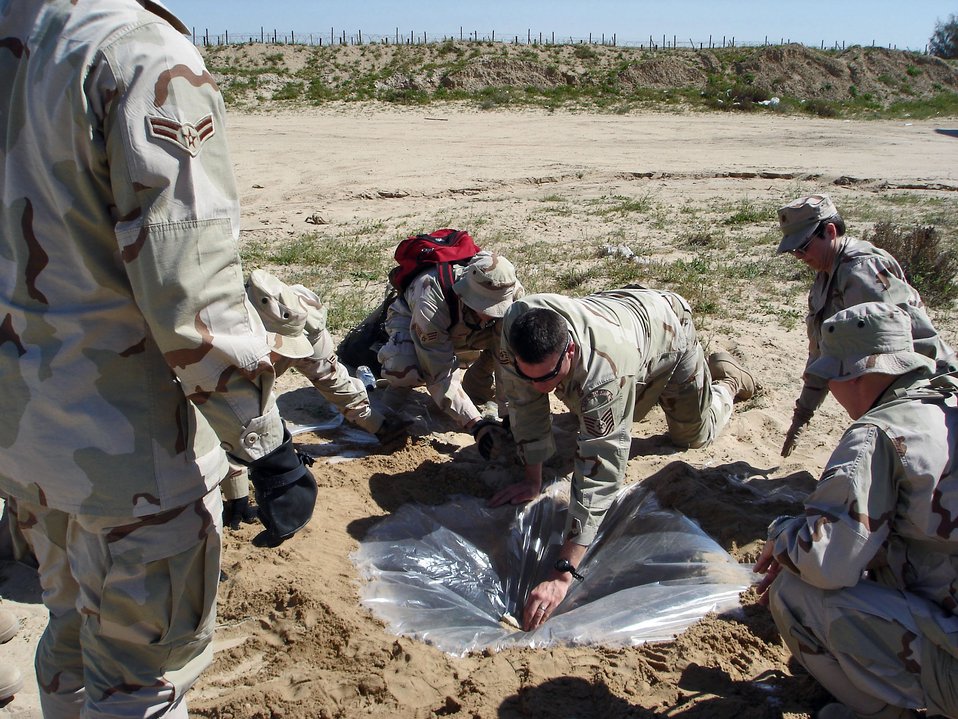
Desert survival

Tech. Sgt. Joshua Anderson teaches Airmen how to build a solar still during a recent desert survival class at a deployed location. A solar still is made by digging a hole, placing a container to collect water at the bottom, making an airtight cover with a piece of plastic and creating a center of gravity, which makes the water drip into the container. Sergeant Anderson is a member of the Survival, Evasion, Resistance and Escape team.